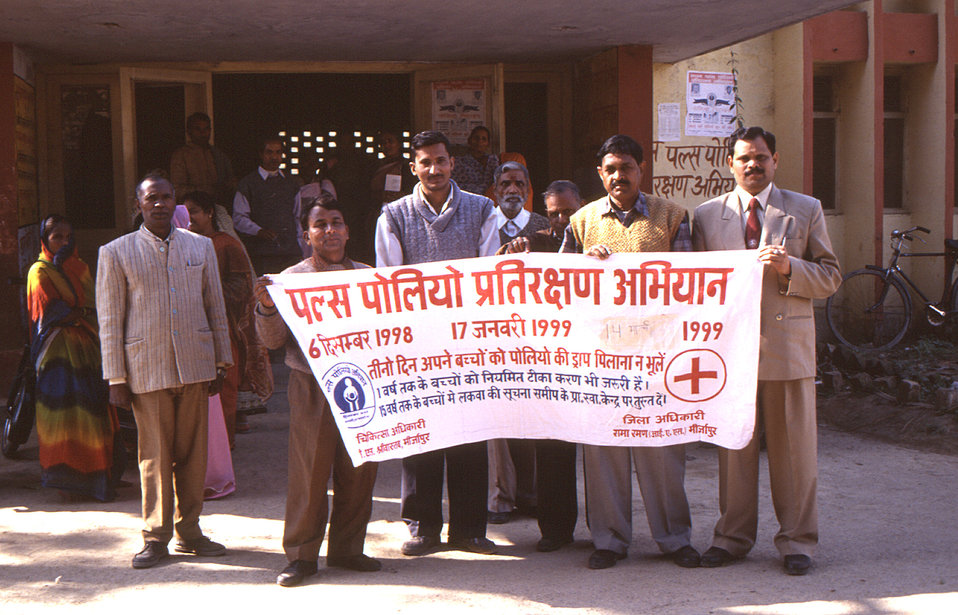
This 2000 image depicted the Health Department staff of the Deoria district of India, and was taken during a 'Stop Transmission of Polio' (STOP) assignment between January and April, 2000. At the time of this field assignment, team member/photographer Chris Zahniser, B.S.N., R.N., M.P.H., was assigned to the state of Uttar Pradesh in northern India, and spent three months working in the districts of Gorakhpur and Deoria.